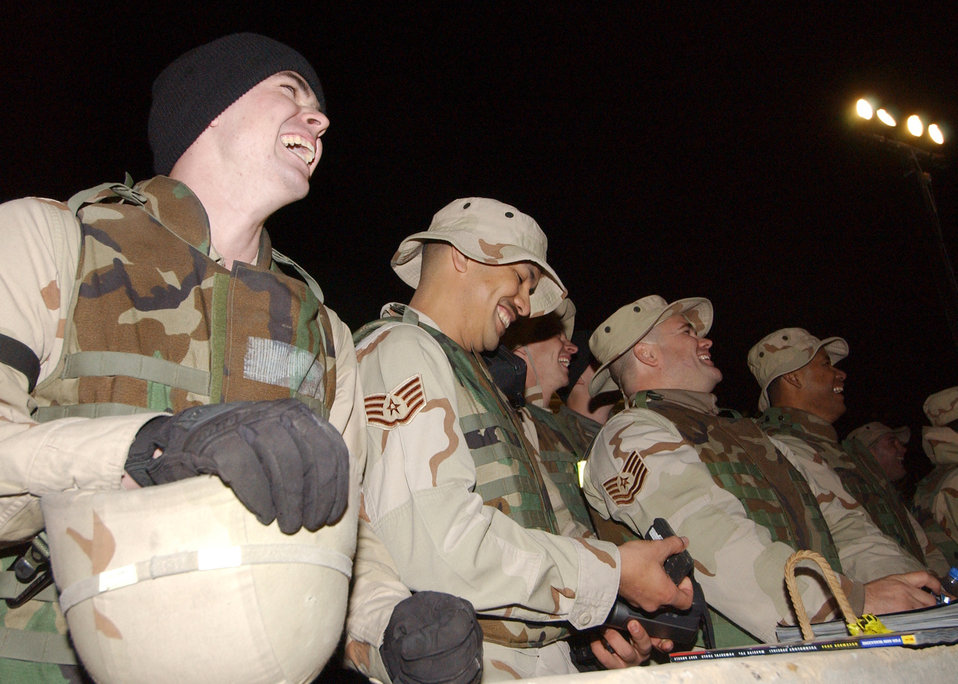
Balad Airmen welcome USO tour

BALAD AIR BASE, Iraq -- From left to right, Airman 1st Class Scott Bledsoe, Staff Sgt. Joshua Alvarez, Tech. Sgt. Jude Harper and Staff Sgt. Jay Balce laugh as comedian Robin Williams performs for nearly 2,000 servicemembers here Dec. 14. All four Airmen are assigned to the 332nd Expeditionary Aircraft Maintenance Squadron and are deployed here supporting Operation Iraqi Freedom. Mr. Williams came to Balad as part of the Chairman's United Service Organizations Holiday Tour.